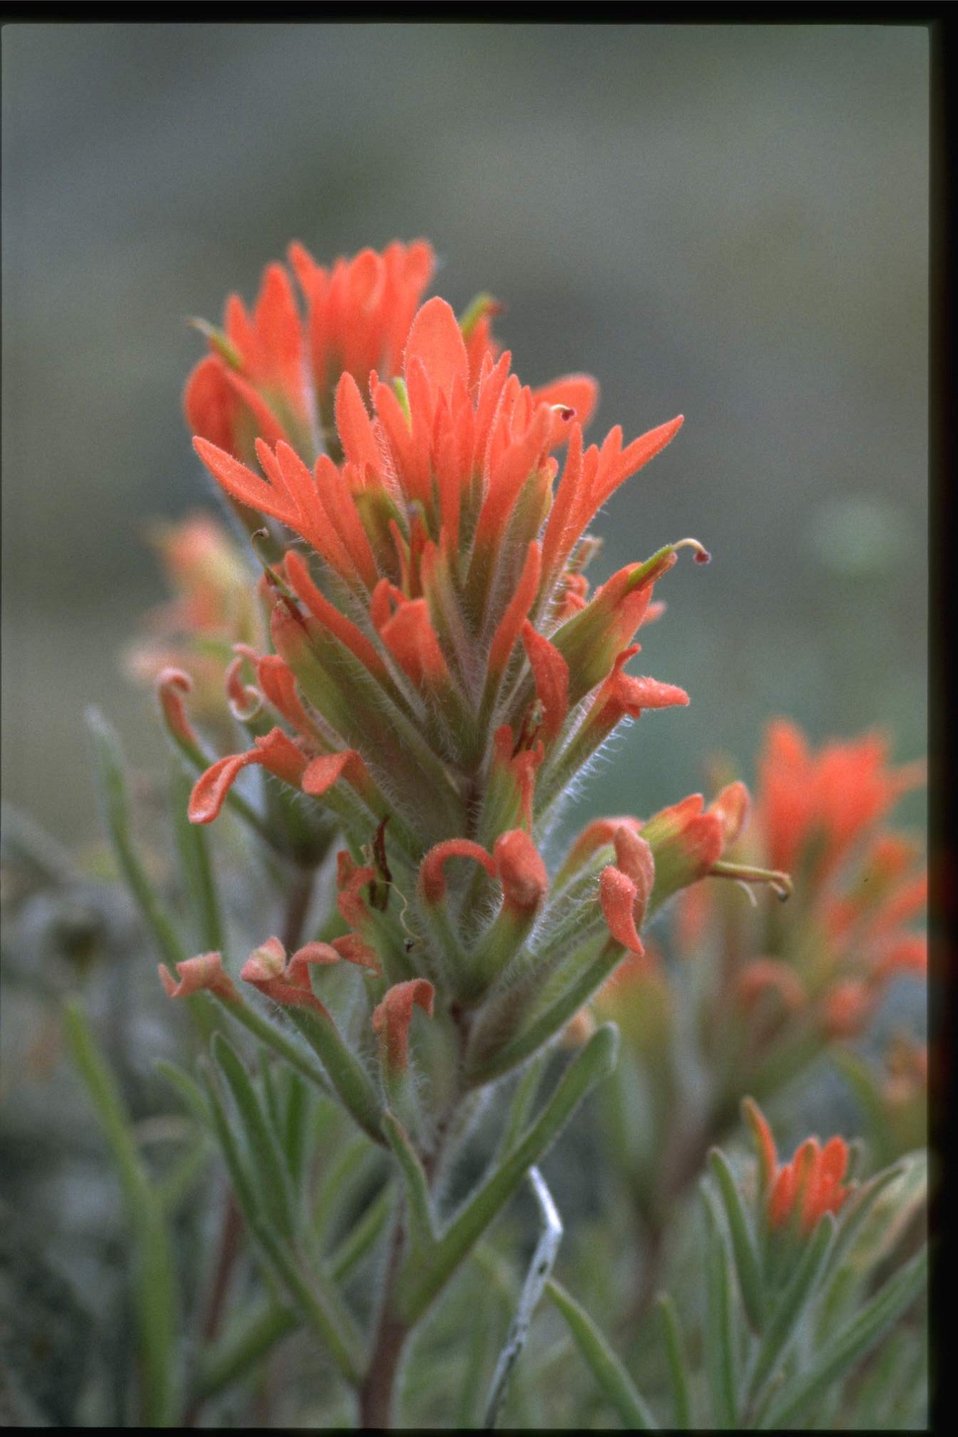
Medium shot of Indian Paintbrush wildflowers.